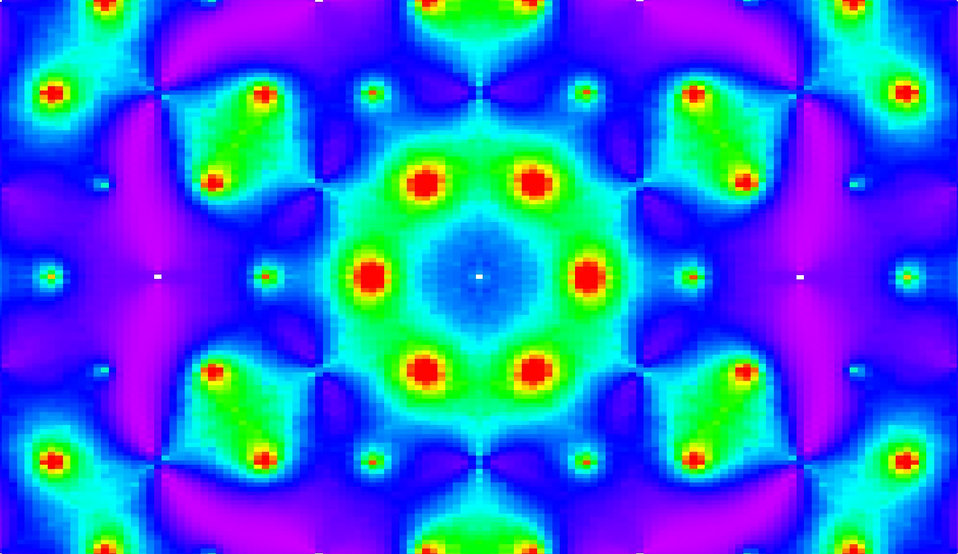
Magnetic Monopoles